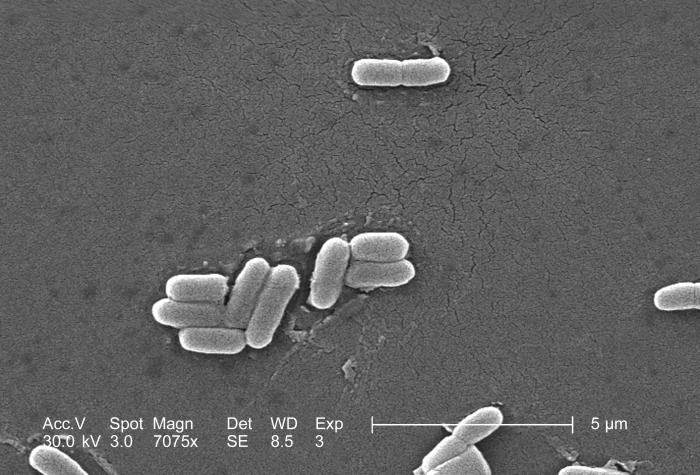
Under a magnification of 7075x, this scanning electron micrograph (SEM) depicted a number of Gram-negative Escherichia coli bacteria of the strain O157:H7, which is one of hundreds of strains of this bacterium. Although most strains are harmless, and live in the intestines of healthy humans and animals, this strain produces a powerful toxin, which can cause severe illness.E. coli O157:H7 was first recognized as a cause of illness in 1982 during an outbreak of severe bloody diarrhea; the outbreak was traced to contaminated hamburgers. Since then, most infections have come from eating undercooked ground beef.The combination of letters and numbers in the name of the bacterium refers to the specific markers found on its surface, which distinguishes it from other types of E. coli. See PHIL 10066 for a colorized version of this image.